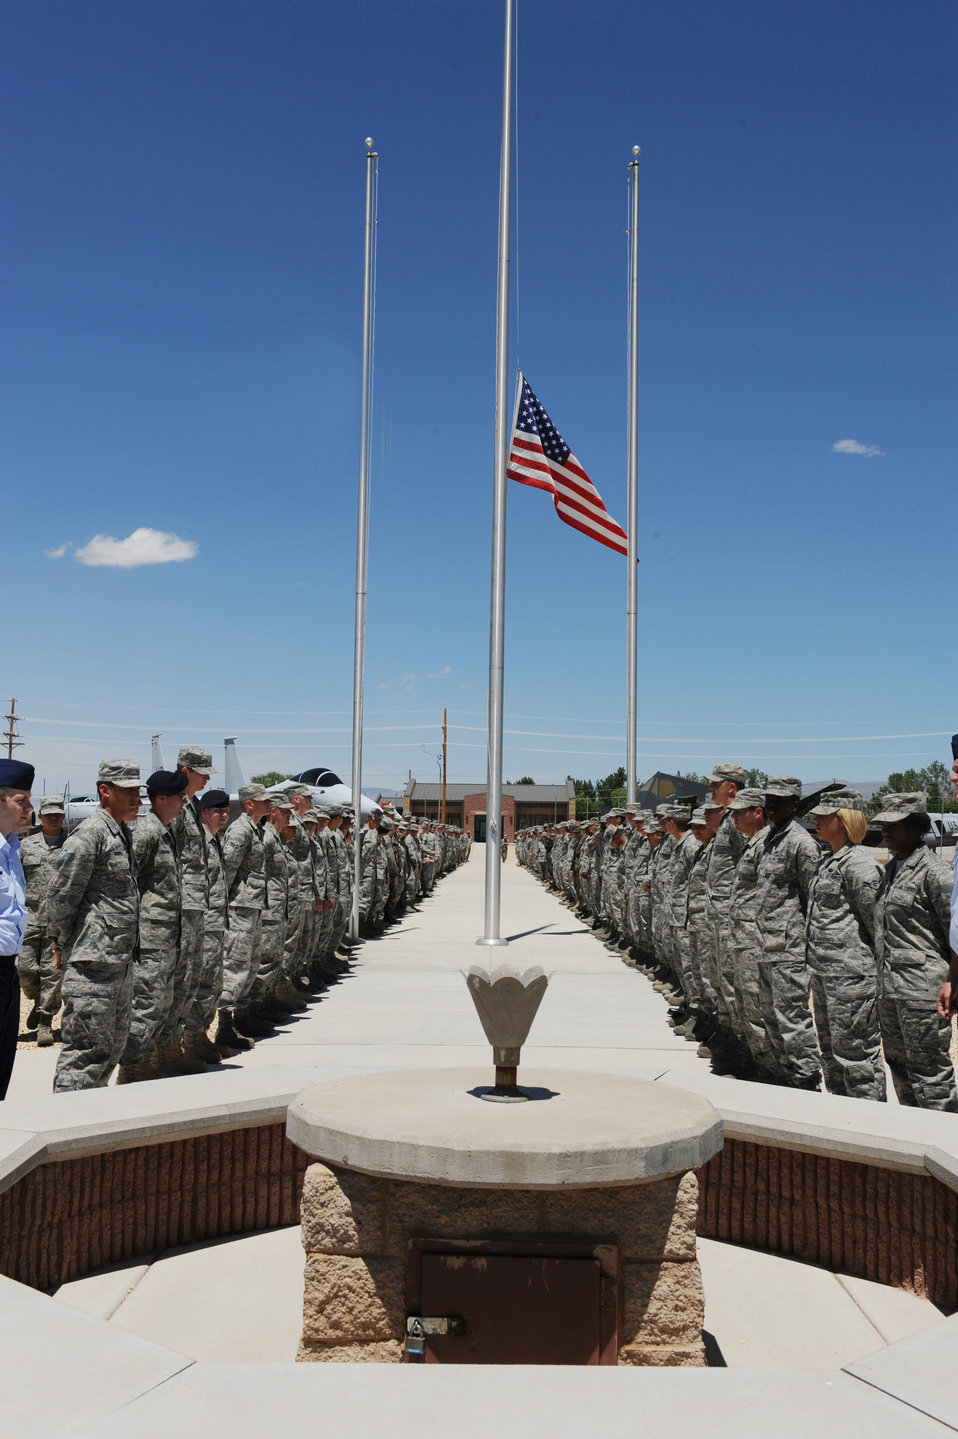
Holloman Airmen honor fallen Soldier

Holloman Air Force Base members stand before the POW/MIA monument before marching toward the front gate to render a final salute to Army Spc. Christopher Kurth June 11 at Holloman Air Force Base, N.M. The Soldier was killed in a grenade attack June 4 near Kirkuk, Iraq. Specialist Kurth was a native of Alamogordo, N.M., and was stationed at Fort Hood, Texas.